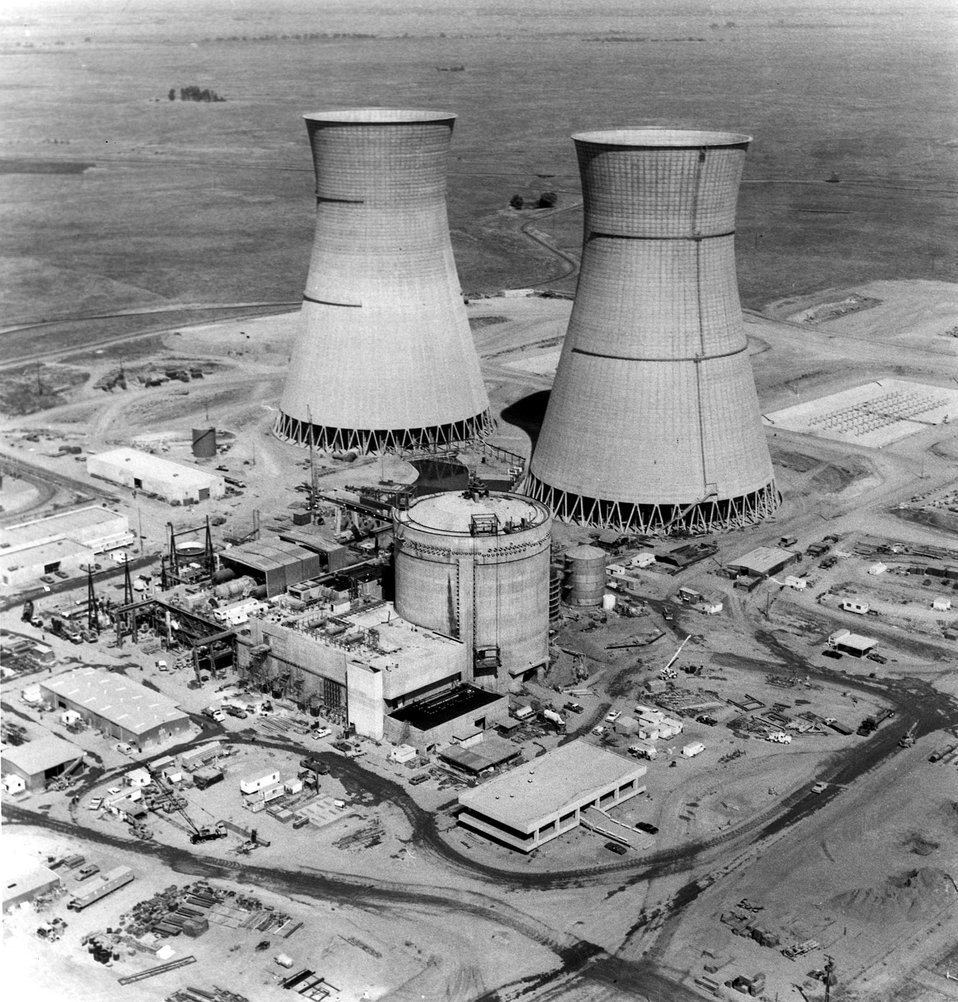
Rancho Seco Nuclear Generating Station unit 1 near Clay Station, California. The Sacramento Municipal Utility District's generating station employs Babcock & Wilcox pressurized water reactor and will generate 913,000 Kw electric. Circa 1974.